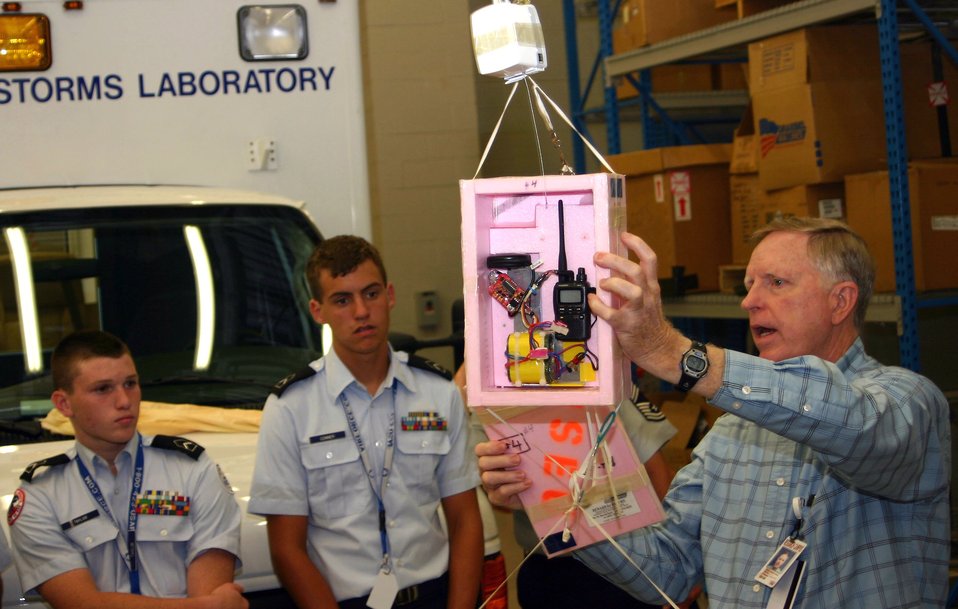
Junior ROTC cadets explore Air Force careers

Air Force Junior ROTC cadets Wrenn Taylor and Jake Conner listen as Dr. W. David Rust of the National Oceanic and Atmospheric Administration demonstrates how a weather balloon collects atmospheric data and relays it back to the National Weather Service. Approximately 450 cadets from Air Force Junior ROTC units worldwide participated in the 2007 Air Force Junior ROTC Aerospace and Technology Camps during the last two months. The annual program, which featured eight camps in New Mexico and Oklahoma, aims to broaden the career goals and develop future leaders among America's Air Force Junior ROTC cadets.